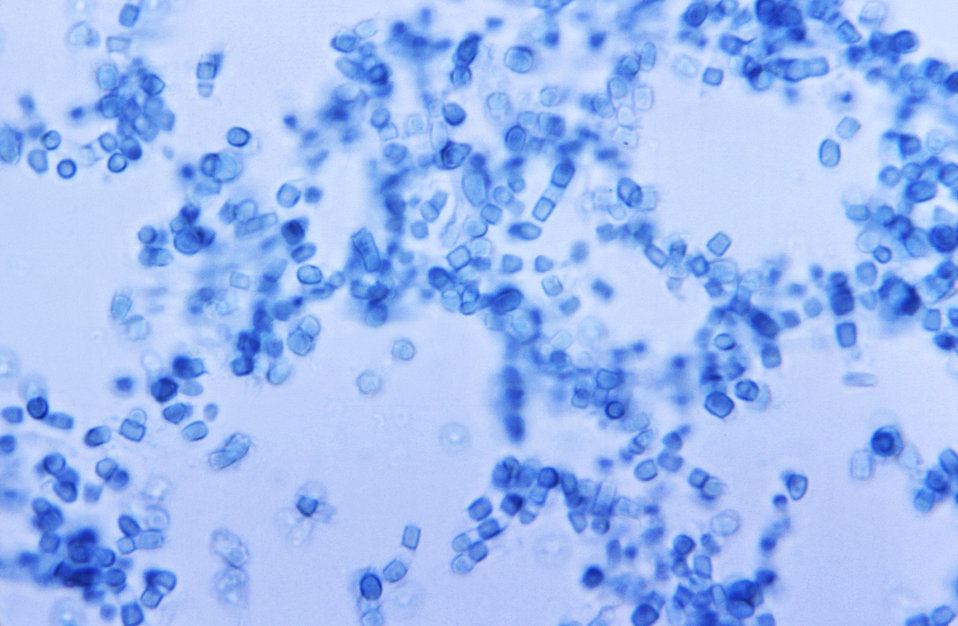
Magnified 500X, this photomicrograph revealed the presence of numerous thick-walled Coccidioides immitis arthroconidia and arthrospores. The average arthrospore measures 3.0 x 4.5�m, and is barrel-shaped.